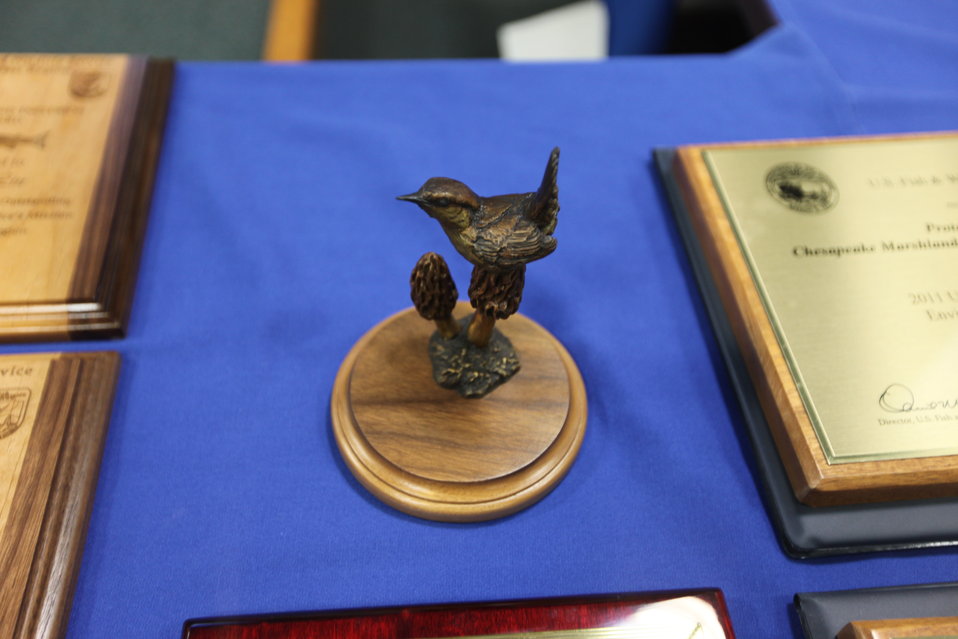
Northeast Region Employee Appreciation Awards

Biologist of the Year Award